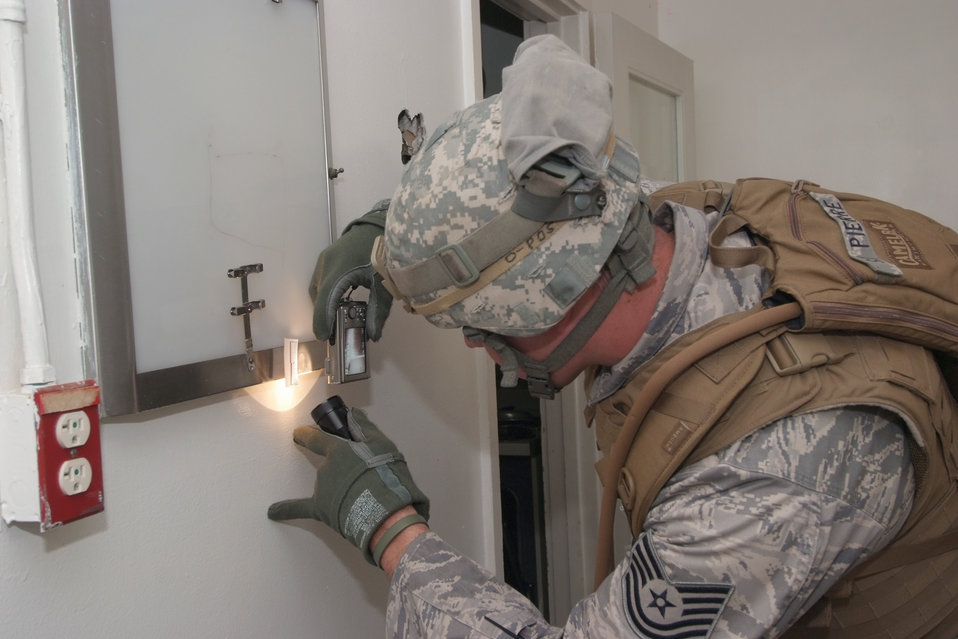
Battlefield Forensics Course 2010

Tech. Sgt. Daniel St. Pierre takes a photograph of a piece of evidence during a battlefield forensics course at March Air Reserve Base, Calif. Sergeant St. Pierre is a member of the 4th Combat Camera Squadron.